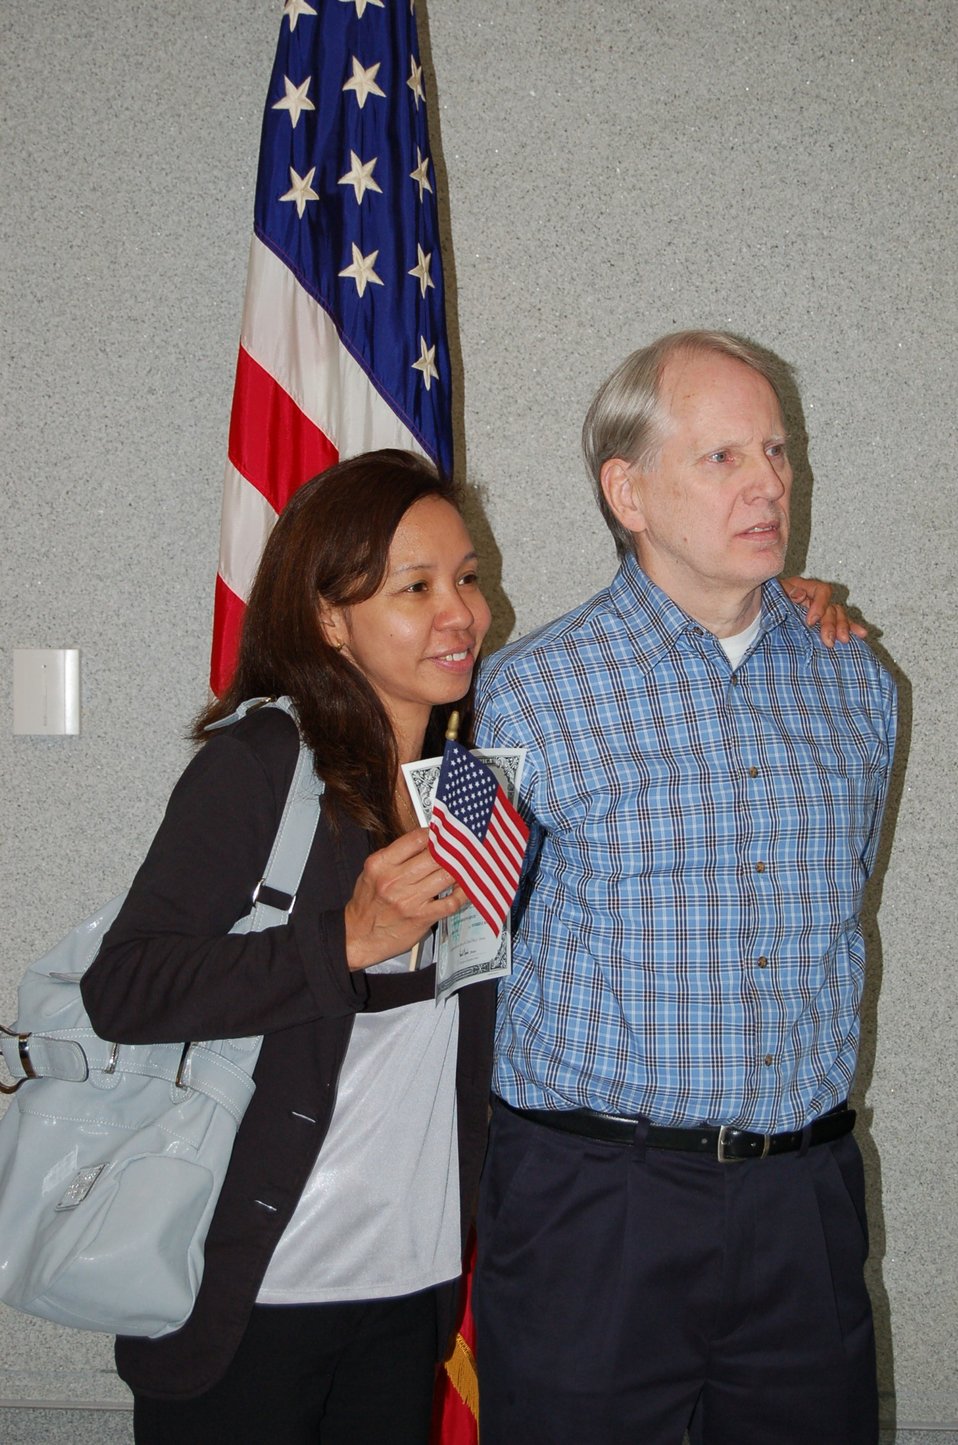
New Citizens